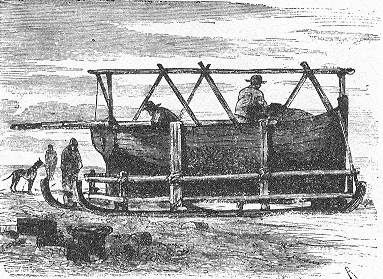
An illustration from Jules Verne's novel 'Journeys and Adventures of Captain Hatteras', part II: 'The Field of Ice' drawn by Édouard Riou and/or Henri de Montaut. Polski: Ilustracja powieści Juliusza Verne'a 'Podróże i przygody kapitana Hatterasa', części II: 'Pustynia lodowa' autorstwa Édouarda Riou i/lub Henri de Montauta. Français : Jules Verne: 'Voyages et aventures du capitaine Hatteras - Le désert de glace', Édouard Riou et Henri de Montaut.